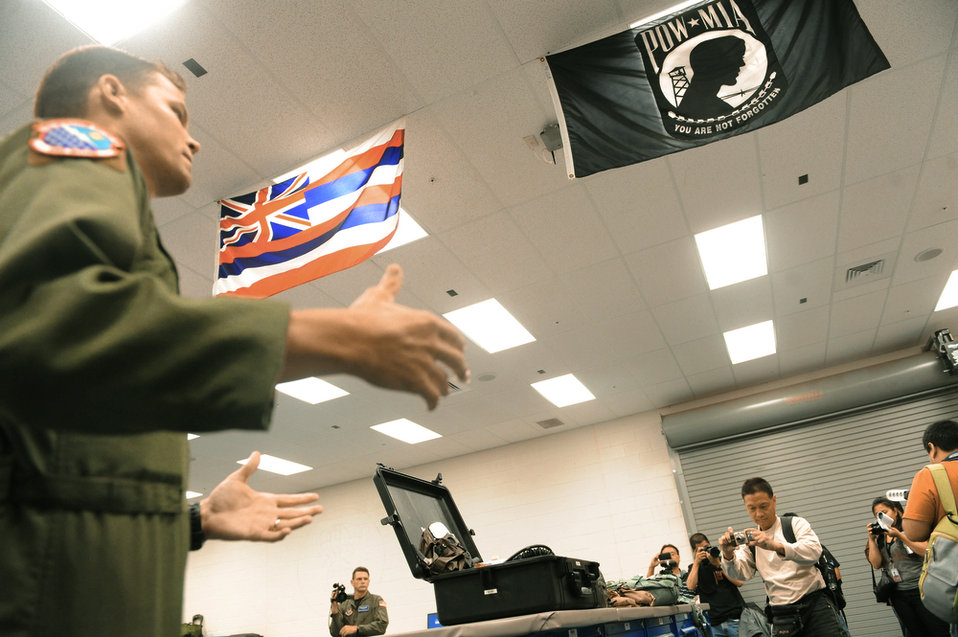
RIMPAC bloggers visit

Capt. Chris Keller briefs local bloggers about the duties of the Airmen who work in the life support section of the 535th Airlift Squadron before the group's ride aboard a C-17 Globemaster III to watch an Improved Container Delivery Systems air drop July 16, 2010, over the Island of Hawaii. The air drop was conducted to show the bloggers the capabilities Pacific Air Forces during the Rim of the Pacific 2010 exercise.